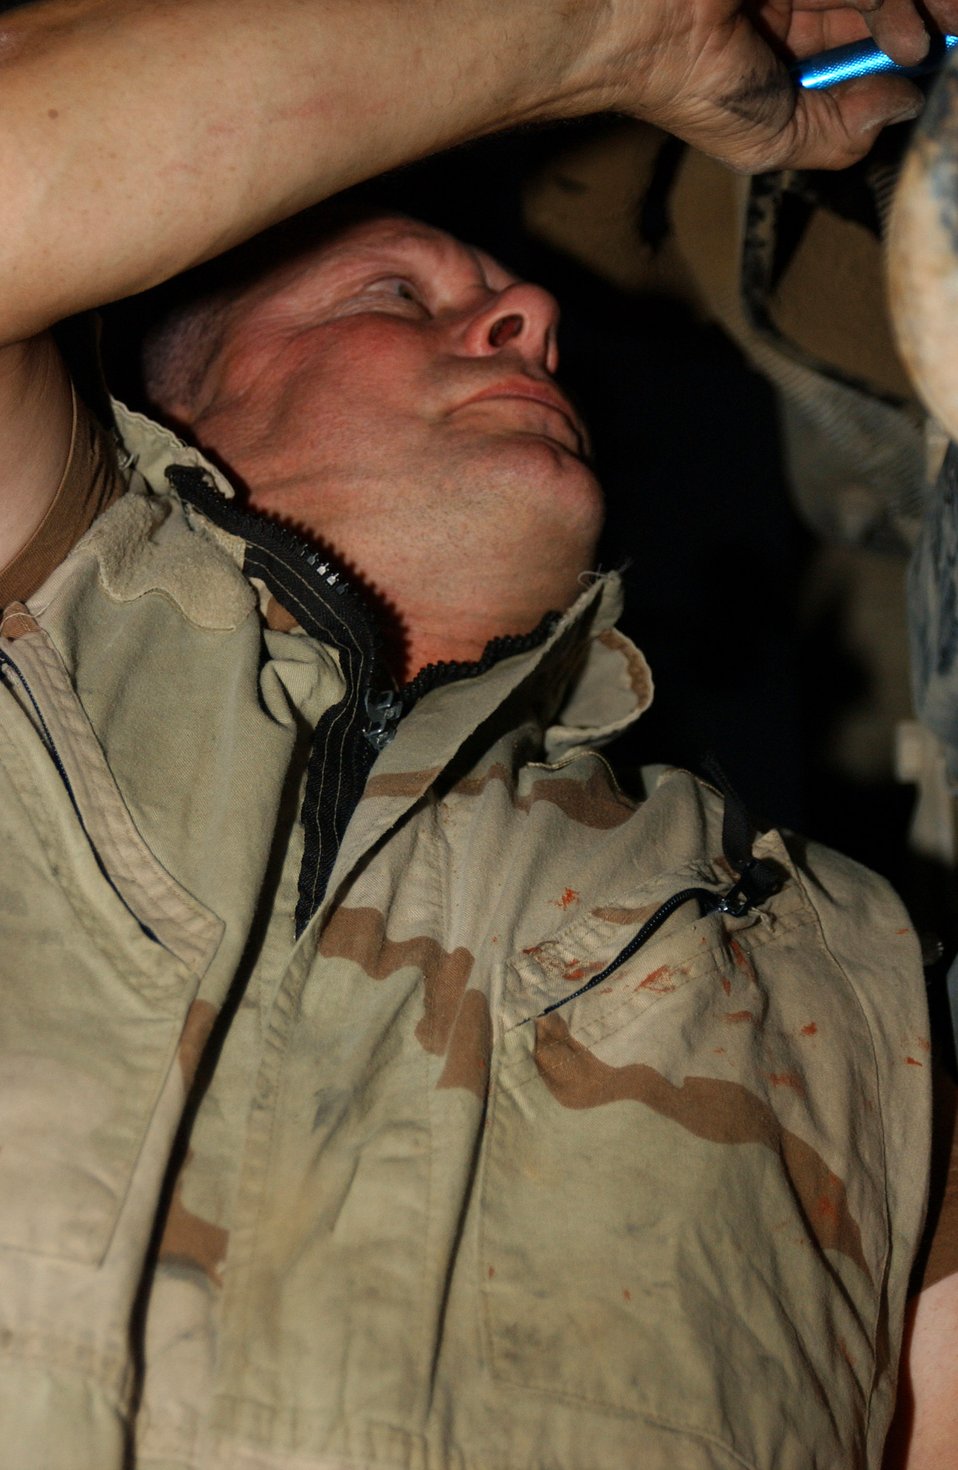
Getting started

ALI BASE, Iraq -- Tech. Sgt. Duane Bryant repairs a bus here. The Airmen with the 407th Expeditionary Logistics Readiness Squadron's vehicle maintenance section here are able to fix any vehicle on base. Sergeant Bryant is deployed from the Iowa Air National Guard's 132nd Logistics Readiness Squadron.